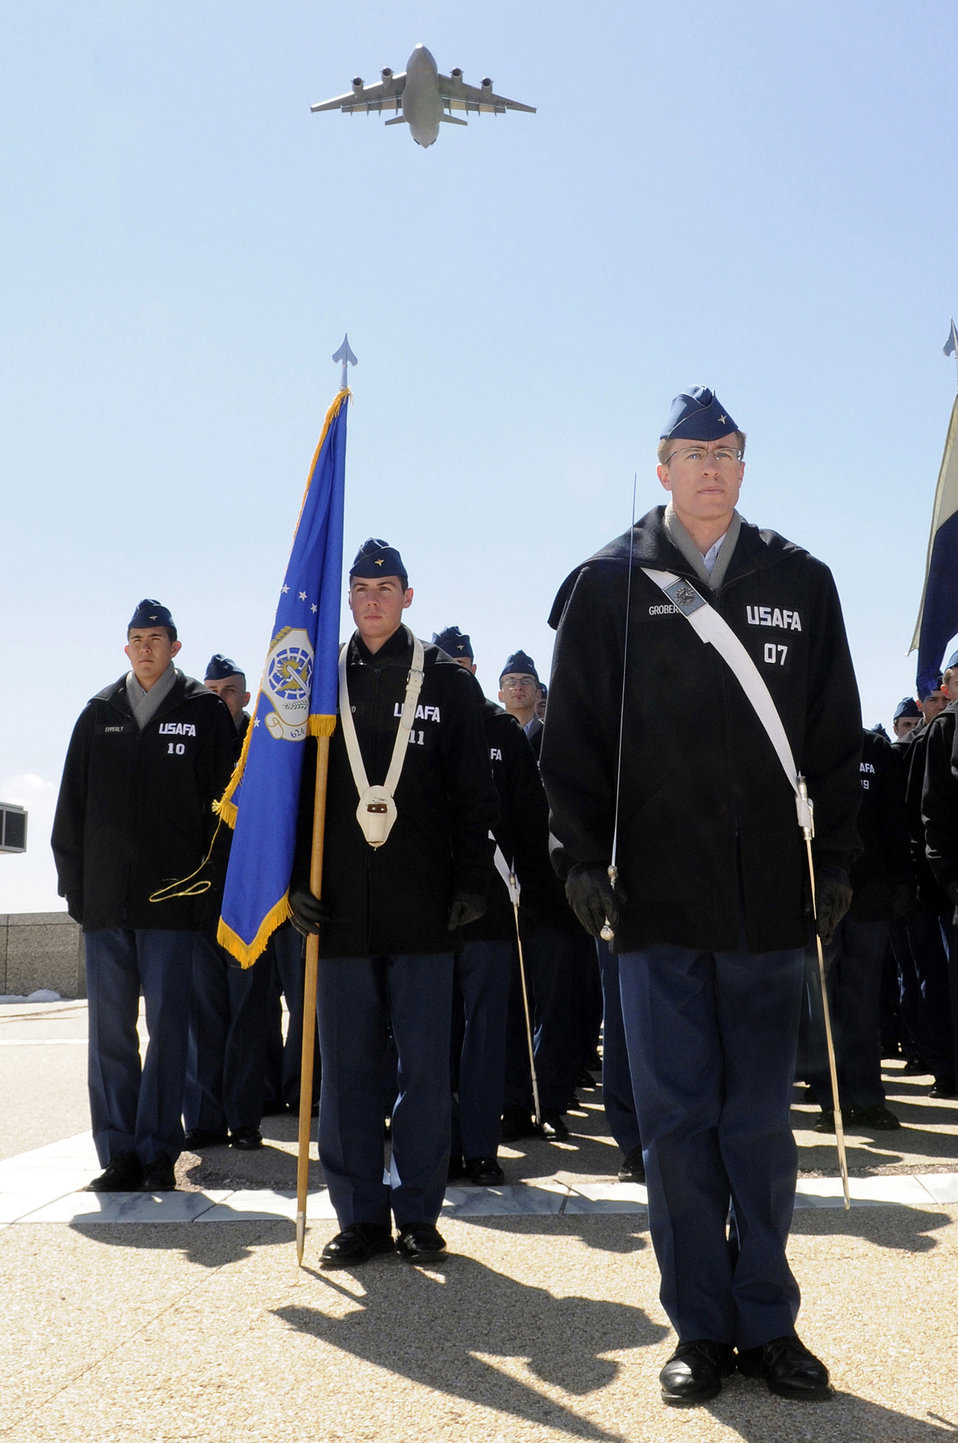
US Air Force Academy, CO

A C-17 flown by Commandant of Cadets Brig. Gen. Samuel Cox, Class of 1984 and Maj. Dan Rohlinger, Class of 1997, flies over the U.S. Air Force Academy terrazzo during the noon-meal formation Mar 31. Leading cadet squadron 28 is Cadet 1st Class Andrew Groberg.